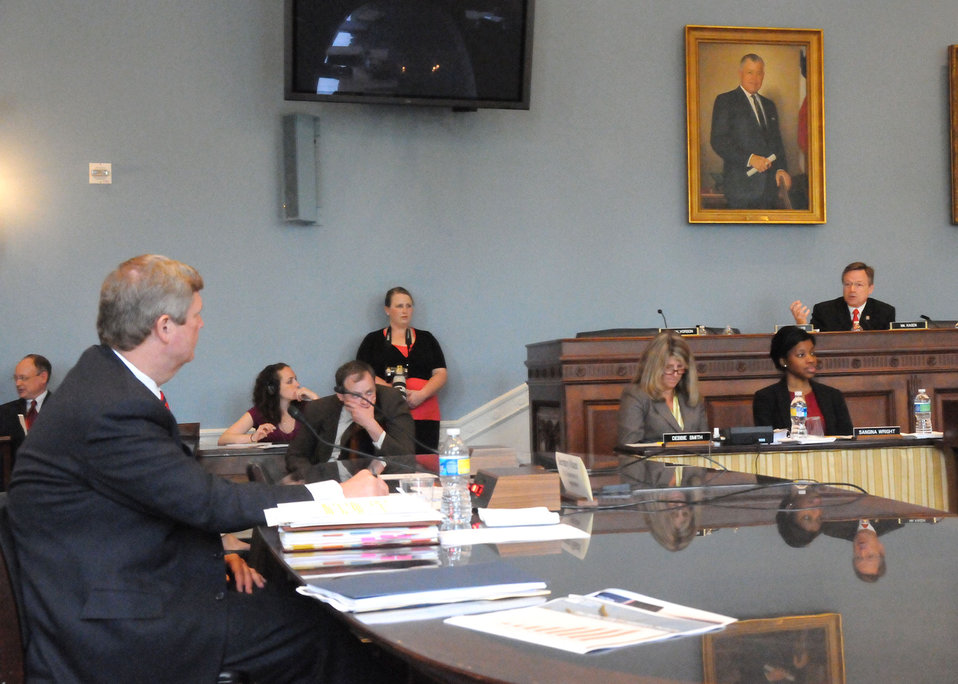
Agriculture Secretary Tom Vilsack answers questions from U.S. Congressman Steve Kagen, M.D. from Wisconsin during the House Committee on Agriculture hearing at the Longworth House Office Building in Washington, D.C., on Wednesday, April 21, 2010.
USDA photo 10di1320-156